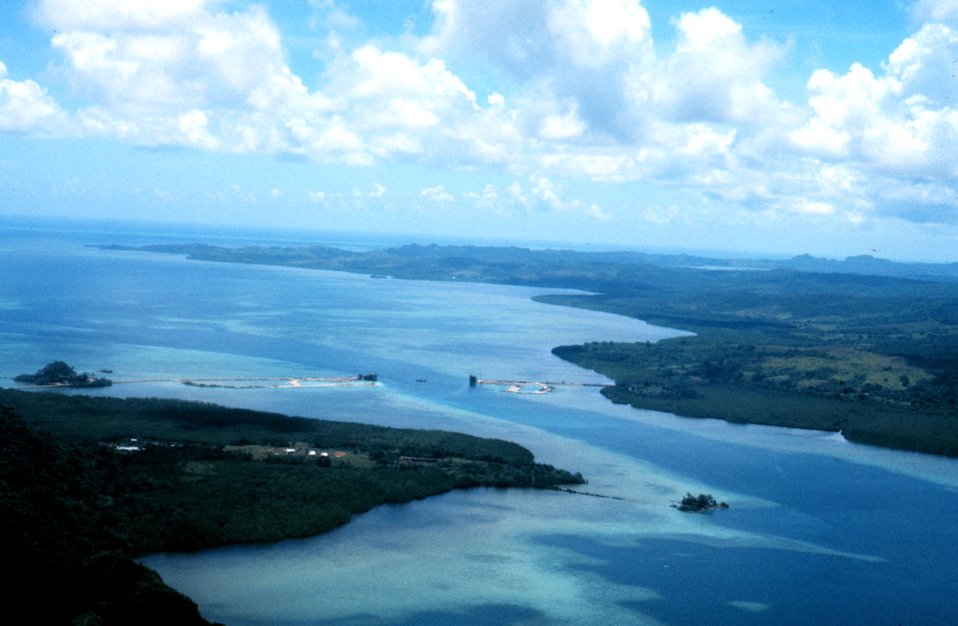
The ship channel between Babelthaup and Koror Islands. Note fringing coral reef